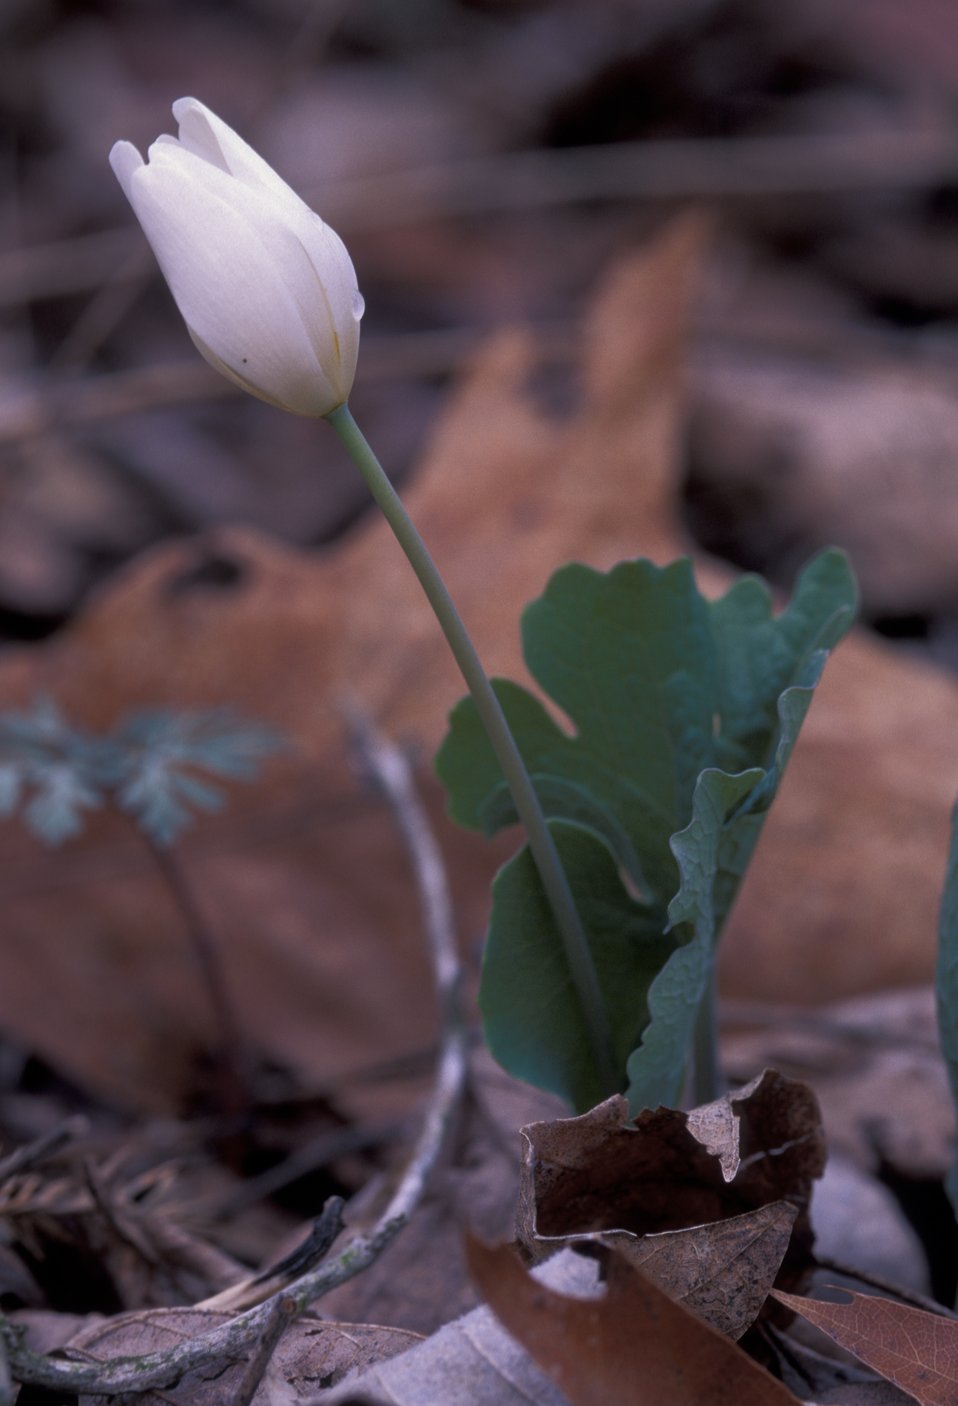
Bloodroot

A close view of a bloodroot plant with a closed white flower.